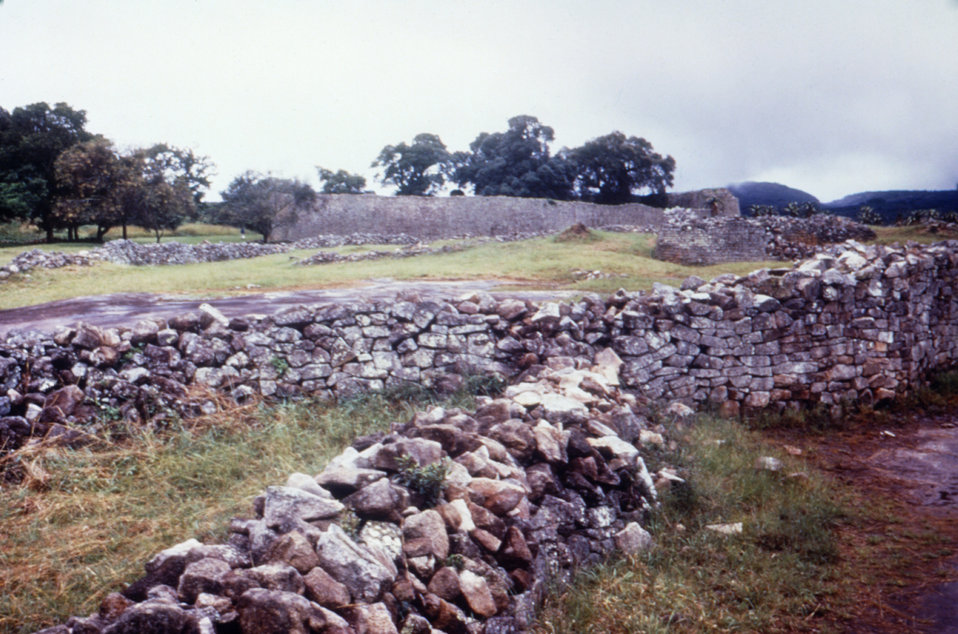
This photo depicts the 700 year old Great Zimbabwe Ruins; one of the South African sites visited by two Marburg patients, 1975.